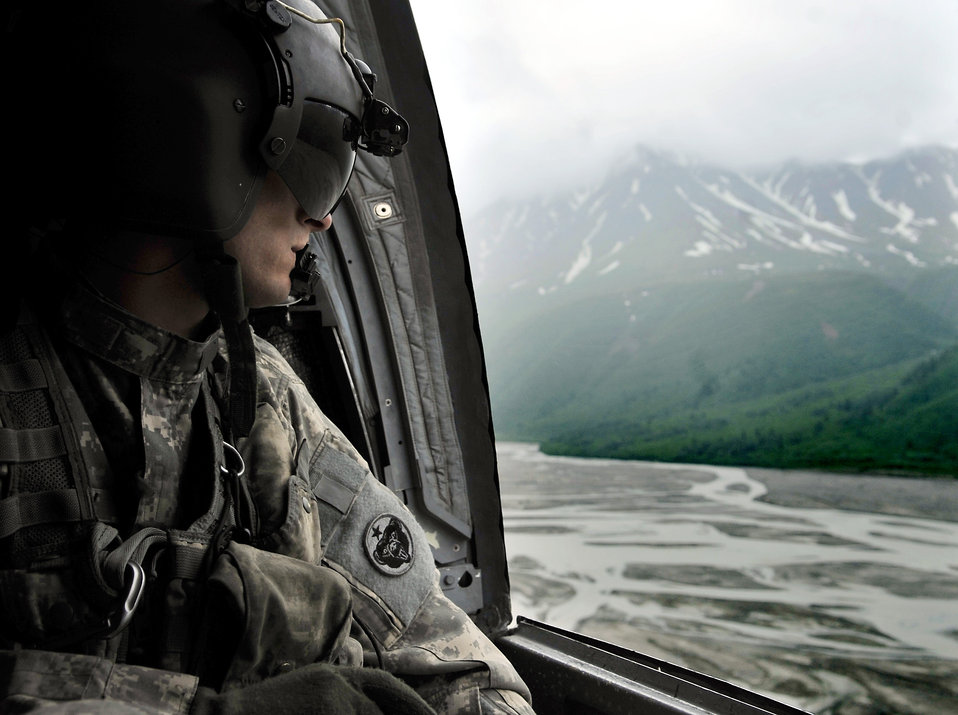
Navy SEALs train during Northern Edge 2009

Army Sgt. William Penley looks over the Alaskan terrain in a CH-47 Chinook during Northern Edge 2009 June 17 at Fort Wainwright, Alaska. Northern Edge is a large-scale exercise hosted in Alaska to improve command, control and communications between the armed services. Sergeant Penley is a flight engineer assigned to Bravo Company 152 at Fort Wainwright.